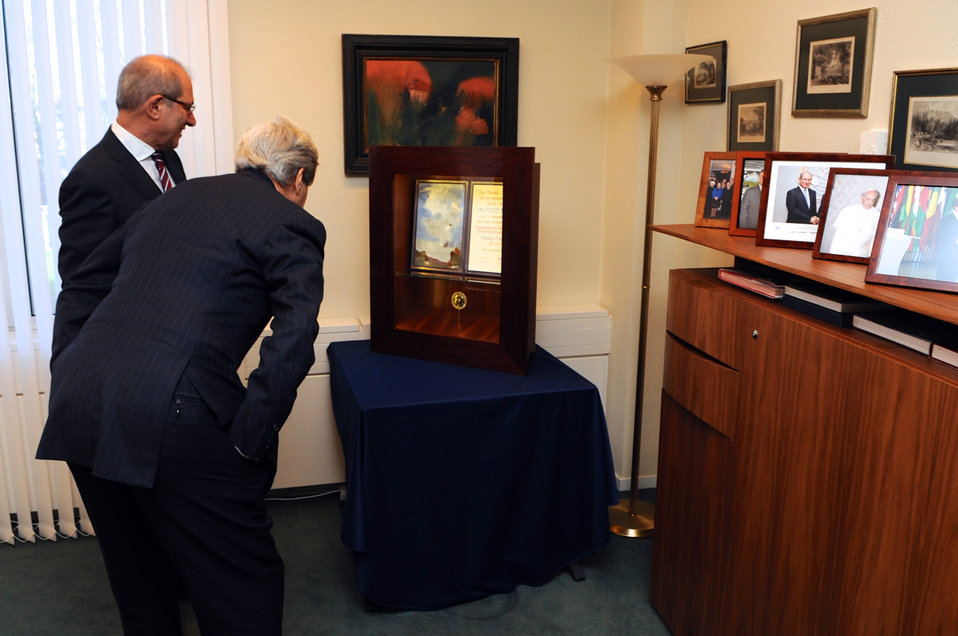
OPCW Director-General Uzumcu Shows Secretary Kerry Organization's Nobel Peace Prize

Organization for the Prohibition of Chemical Weapons Director-General Ahmet Uzumcu shows U.S. Secretary of State John Kerry the Nobel Peace Prize his organization received after Kerry and Russian Foreign Minister Sergey Lavrov negotiated a deal to remove chemical weapons in Syria, following a meeting at The Hague, the Netherlands, on March 24, 2014.